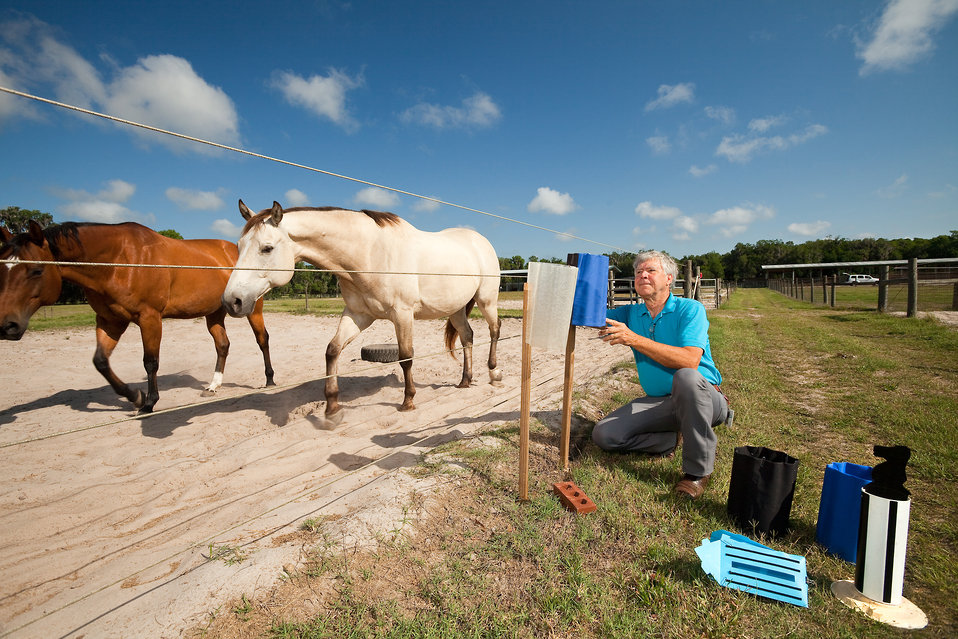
U.S. Department of Agriculture (USDA) Agriculture Research Service (ARS) Entomologist Jerry Hogsette sets out stable fly traps and targets for a field study on May 24, 2012. Stable flies breed in manure, wet straw, and decaying vegetation, and they feed on the blood of livestock and people. Expertise gained in field tests for controlling these flies and other biting insects helps ARS scientists find the best insect controls for the military, farmers, and consumers.